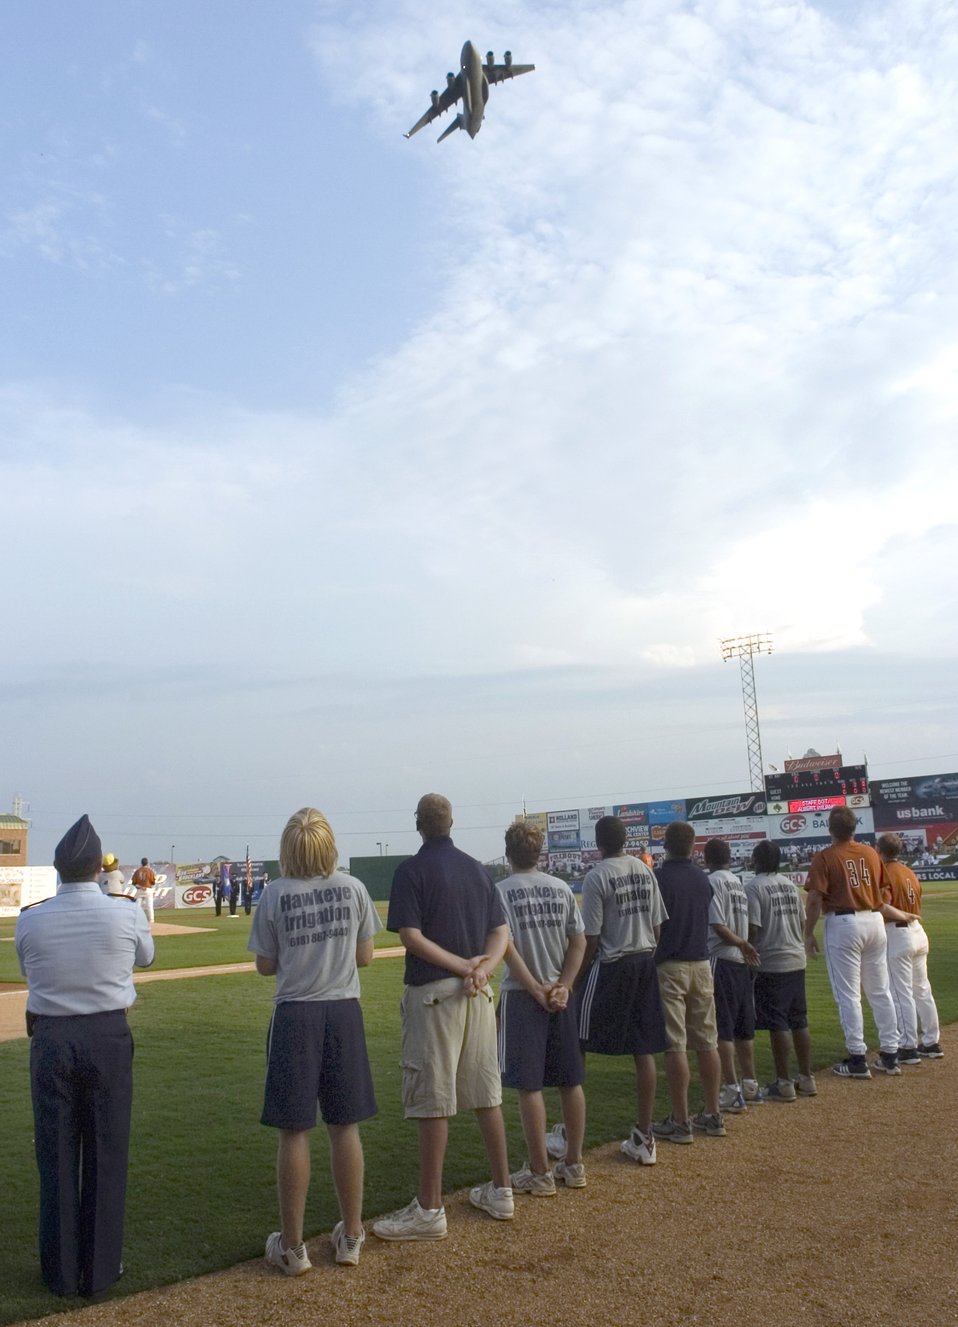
Honoring Airmen

A C-17 Globemaster III from Altus Air Force Base, Okla., flies over the opening ceremonies of the Gateway Grizzlies minor league baseball game in Sauget, Ill., on Aug. 8. Air Force night at the ballpark featured special admissions and promotions for Airmen. The event was one of several activities taking place in the greater St. Louis area celebrating Air Force Week.